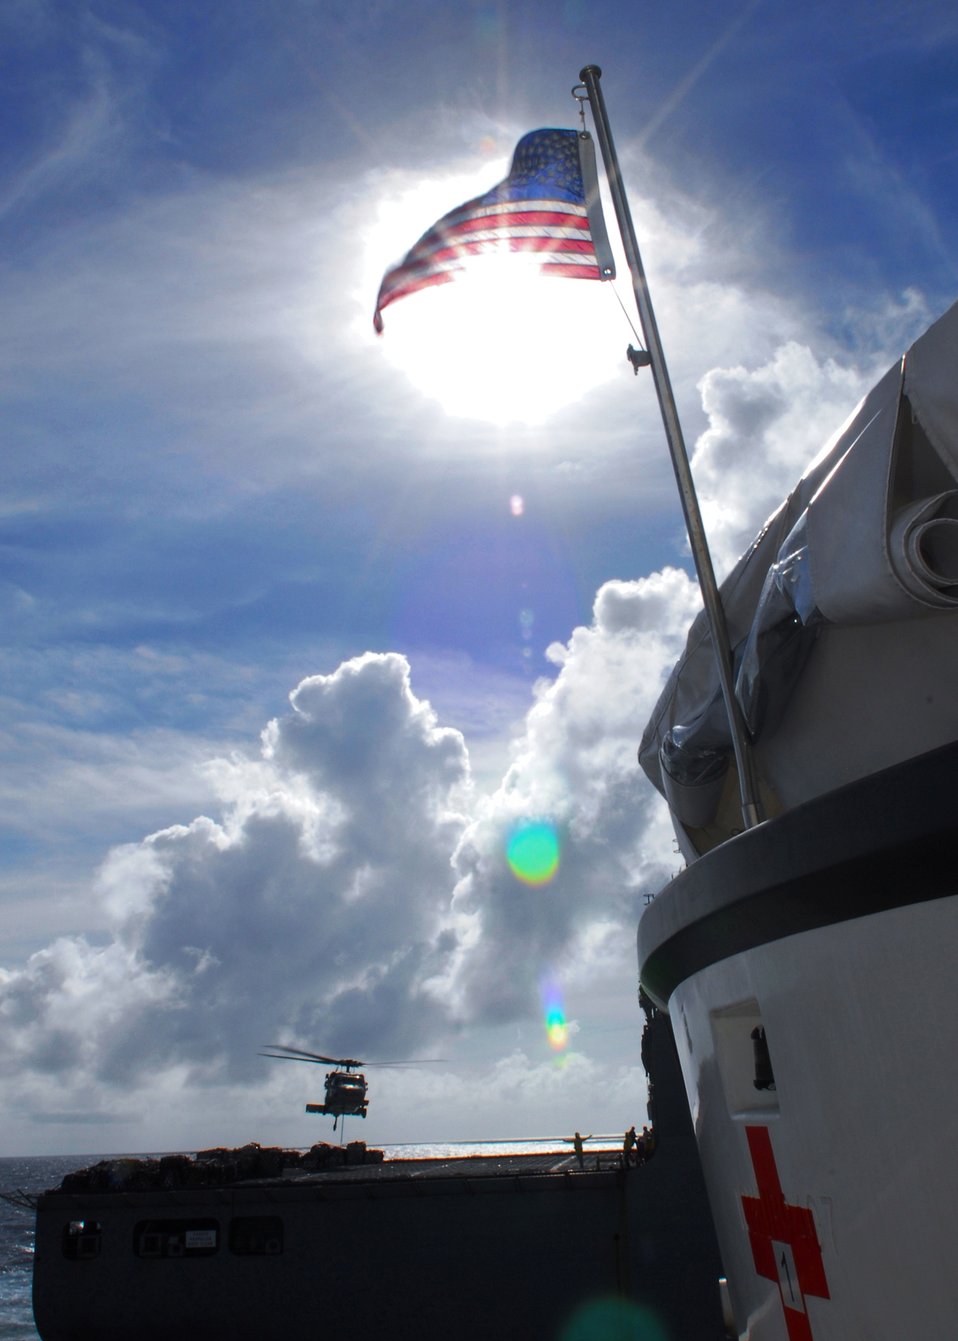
An MH-60S Knighthawk Helicopter Conducts a Vertical Replenishment (VERTREP) With Dry Cargo/ Ammunition Ship USNS Richard E. Byrd (T-AKE 4)

An MH-60S Knighthawk helicopter from Helicopter Sea Combat Squadron 23 “Wild Cards”, embarked aboard the Military Sealift Command hospital ship USNS Mercy (T-AH 19), conducts a vertical replenishment (VERTREP) with Dry Cargo/ Ammunition Ship USNS Richard E. Byrd (T-AKE 4) on July 11, 2010. Mercy is conducting Pacific Partnership 2010, the fifth in a series of annual U.S. Pacific Fleet humanitarian and civic assistance endeavors to strengthen regional partnerships.